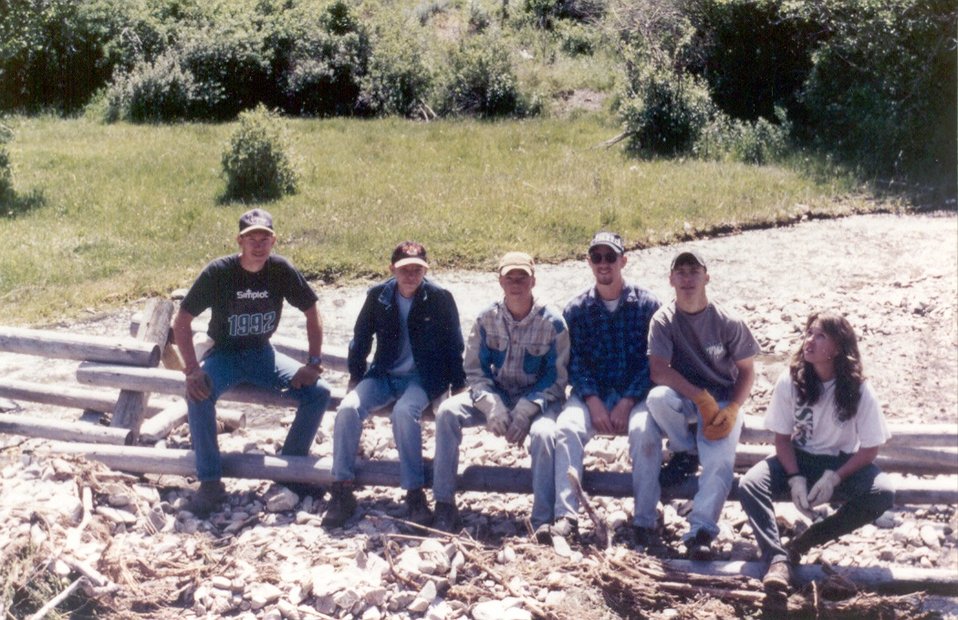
People Salmon Field Office UCSC Upper Columbia Salmon Clearwater District